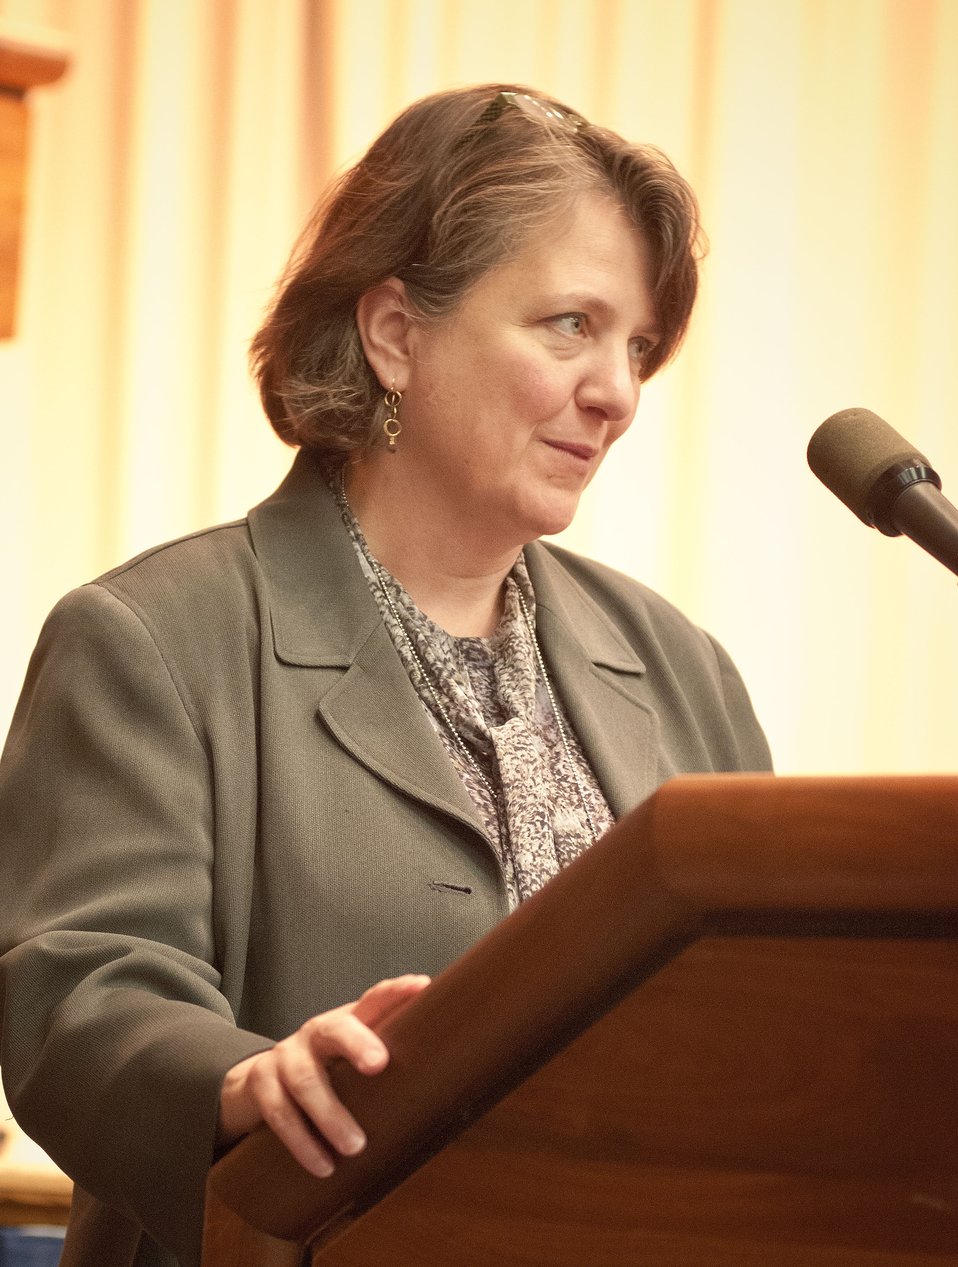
U.S. Department of Agriculture Deputy Secretary Dr. Kathleen Merrigan explained her experience as an intern in Washington, D.C., and offered advice to interns at the United States Department of Agriculture (USDA) Intern Day and Panel Discussion, “Transforming USDA’S Tomorrow Today” in Washington, D.C., on Wednesday, July 11, 2012.